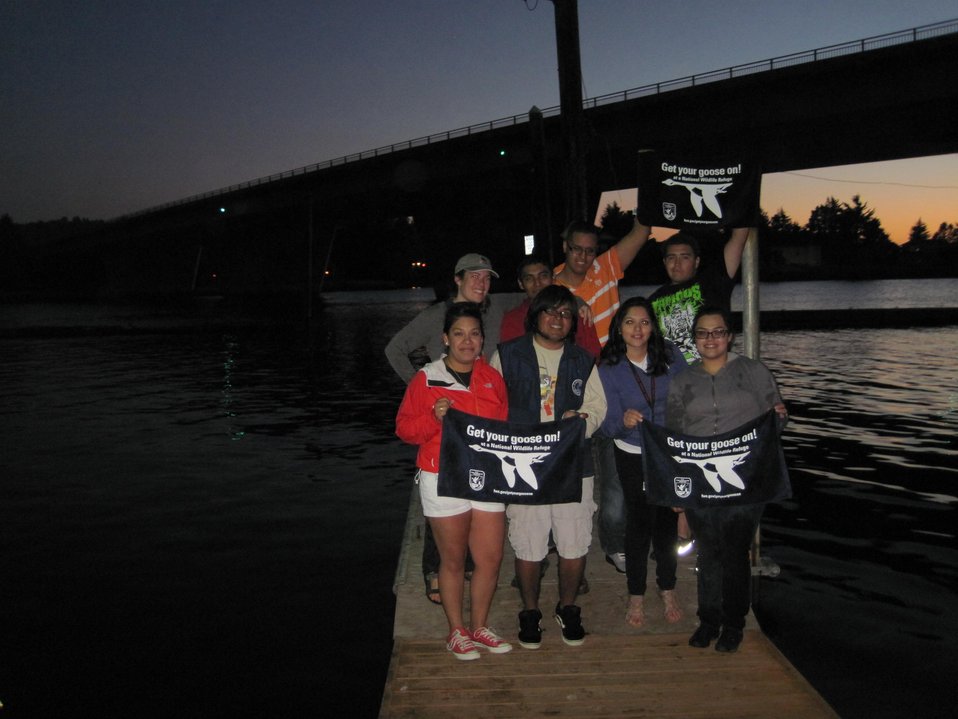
Get Your Goose On! - Siletz Bay Style

City dwellers from Salem, OR visit Siletz Bay NWR for an evening paddle trip led by Bilingual Wildlife Intern Sammy Chavez! GYGO on the dock of the bay!